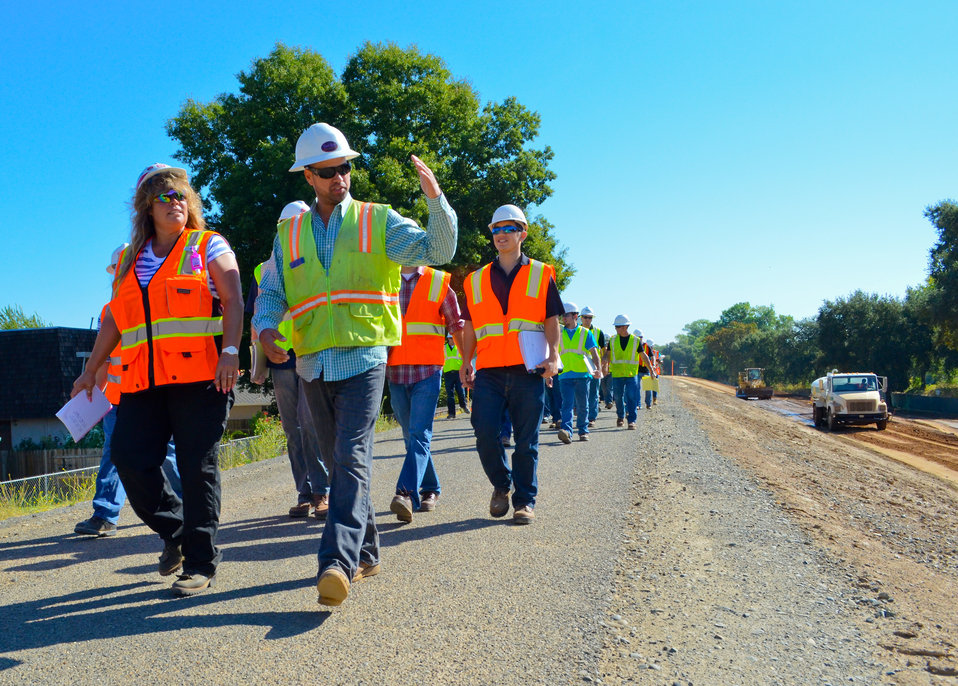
Moe Adams and Danny Santillan conduct site tour

Moe Adams (left) construction representative for the U.S. Army Corps of Engineers Sacramento District discusses construction operations Sept. 7, 2012 with Danny Santillan contractor for the Howe Avenue levee raise project.
Adams is leading a site tour for 30 Sacramento State construction management seniors along the American River in Sacramento, Calif. to observe and measure operational efficiency for a class project.
Santillan owns a U.S. Small Business Administration 8(a)-designated small business and was awarded the contract for the levee work here, Sept. 30, 2011. The Small Business Administration’s 8(a) Business Development Program is designed to help small, disadvantaged businesses compete for federal contracts.